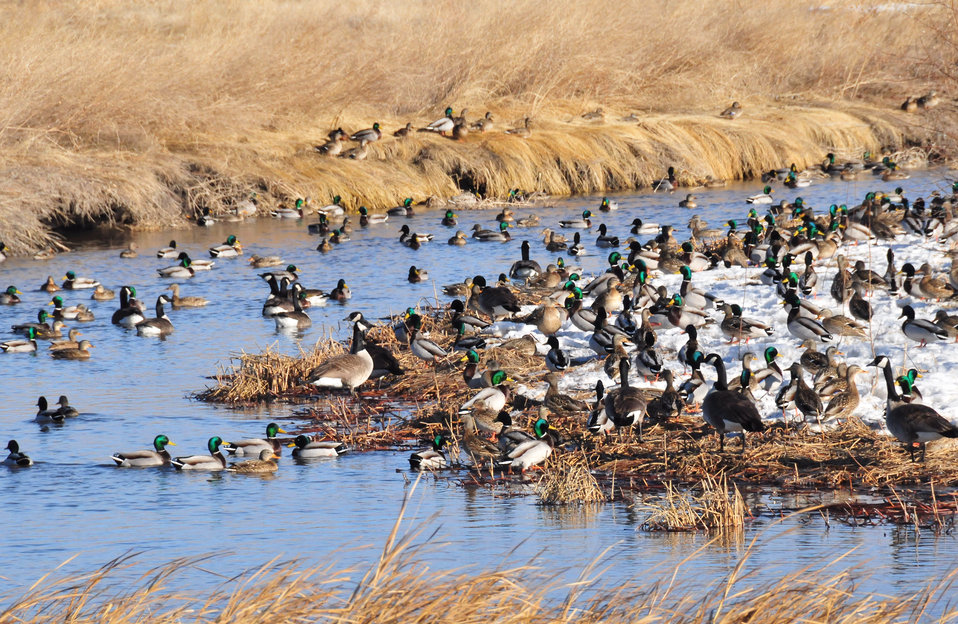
Mallards on Lacreek National Wildlife Refuge